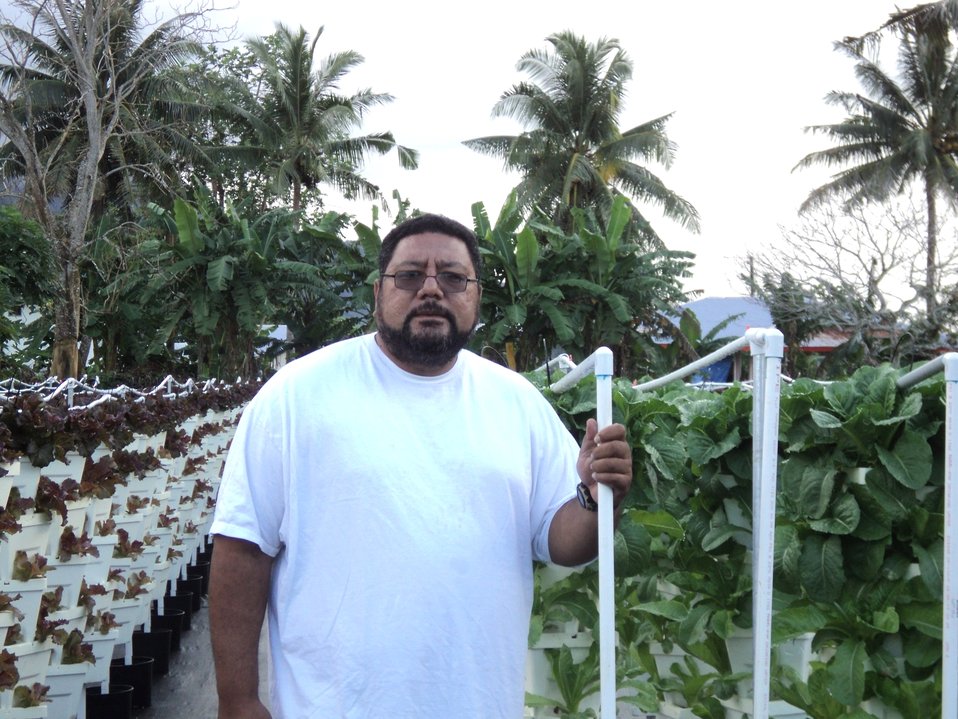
avegalio

A disabled veteran of Operation Desert Shield Edward Avegalio stands in front of his farm in American Samoa on June 6, 2012. Avegalio’s farm provides locally grown, fresh produce to area schools, local restaurants and stores through the first hydroponic farm in American Samoa that was redesigned to allow him to actively work the land. A loan from the U.S. Department of Agriculture (USDA) Farm Service Agency (FSA) gave Avegalio access to credit needed to create a hydroponic operation that incorporates a vertical stack method, increasing the farm’s acreage while providing Avegalio with accessibility.